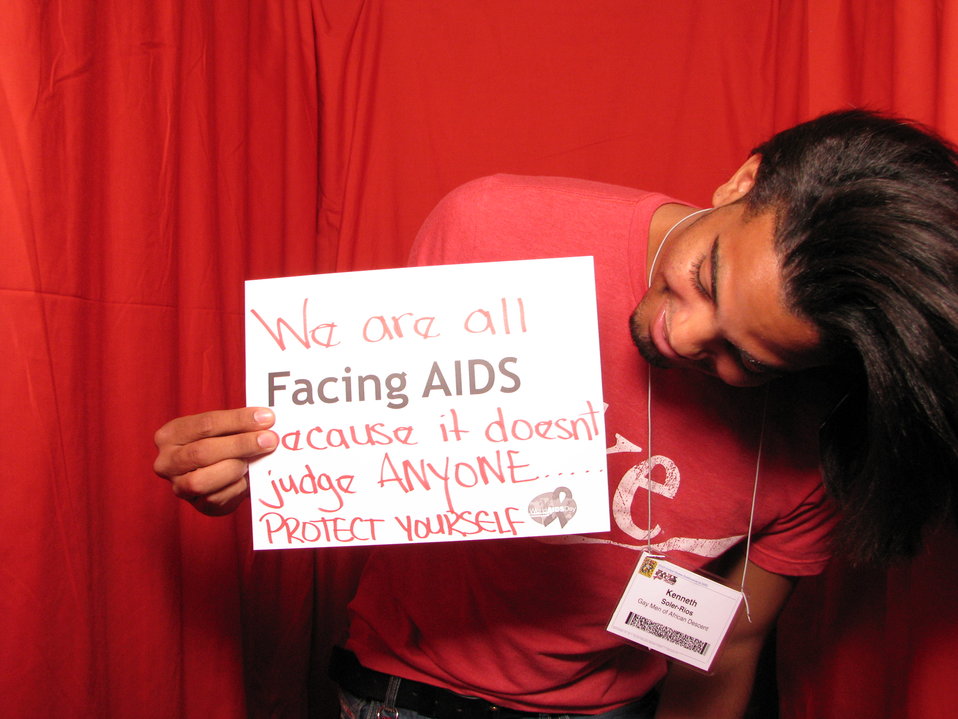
We are all FACING AIDS because it doesn't judge ANYONE... PROTECT YOURSELF.

From the AIDS.gov photo booth at the U.S. Conference on AIDS, September 2010 (Orlando, FL).